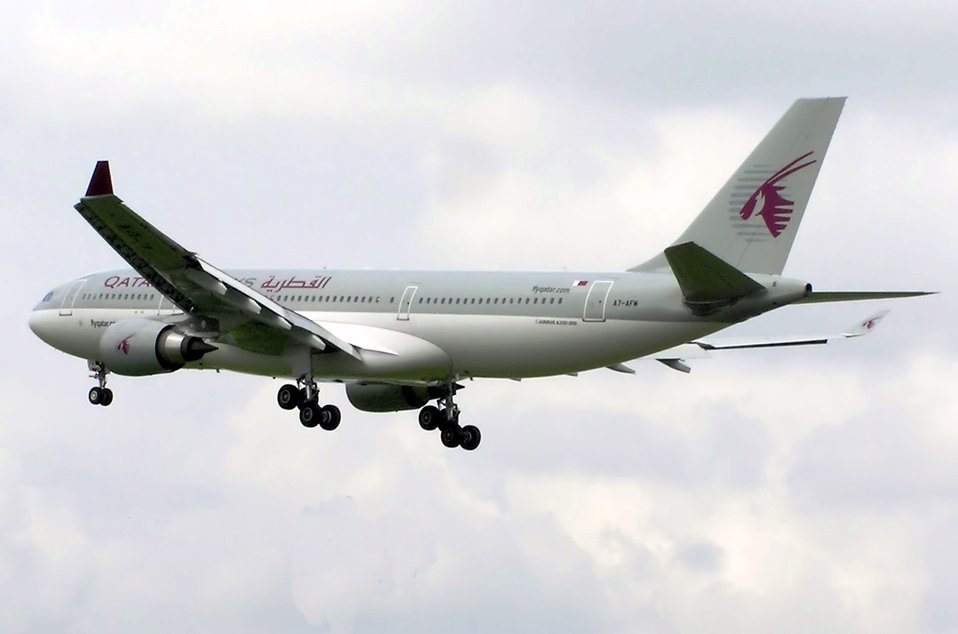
Qatar.a330-200.a7-afm.arp